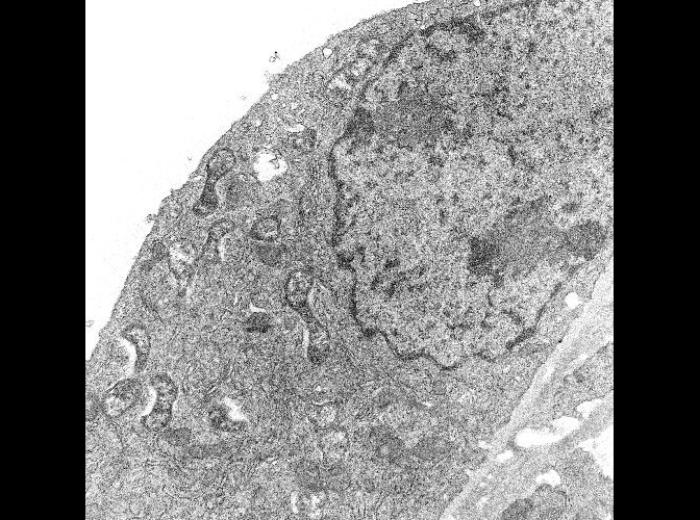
Multiple Rickettsia tsutsugamushi free within the cytoplasm of a mouse peritoneal mesothelial cell.